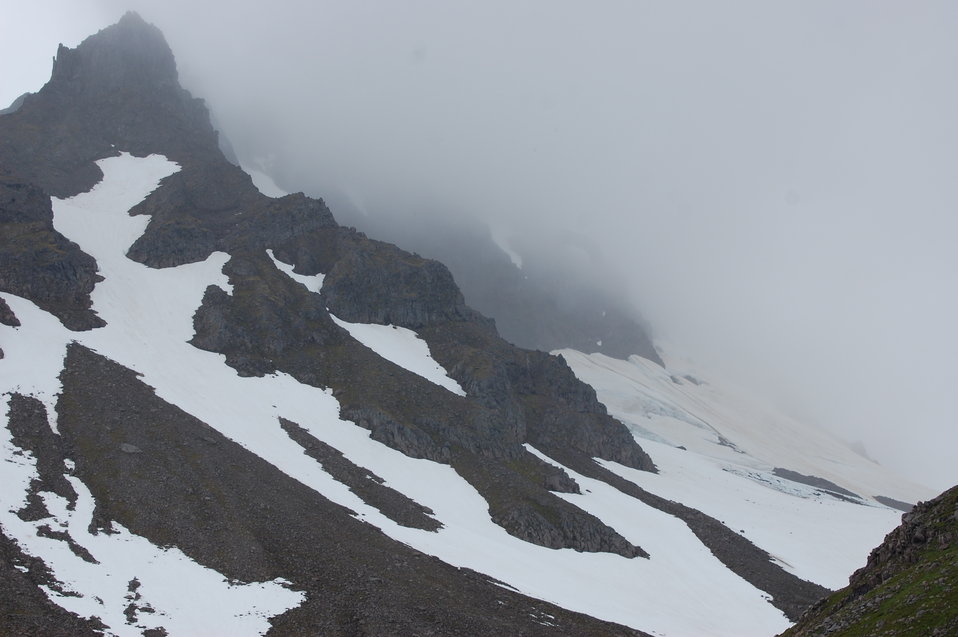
Izembek Wilderness

Wilderness near Frosty Peak, Izembek National Wildlife Refuge
Photo by Kristine Sowl,
USFWS, Public Domain